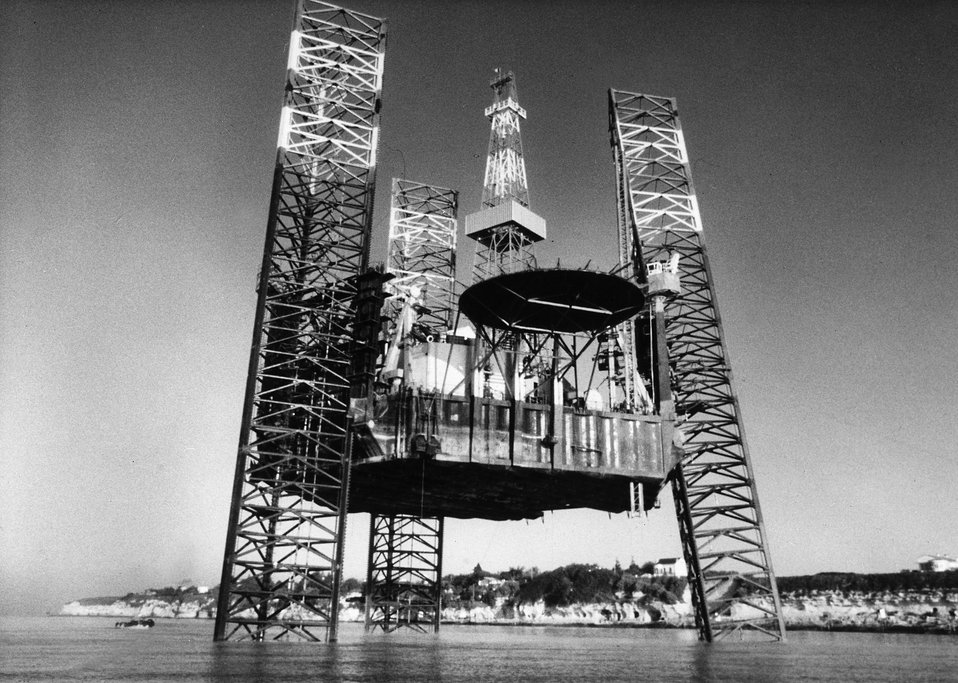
Offshore drilling. c. undated